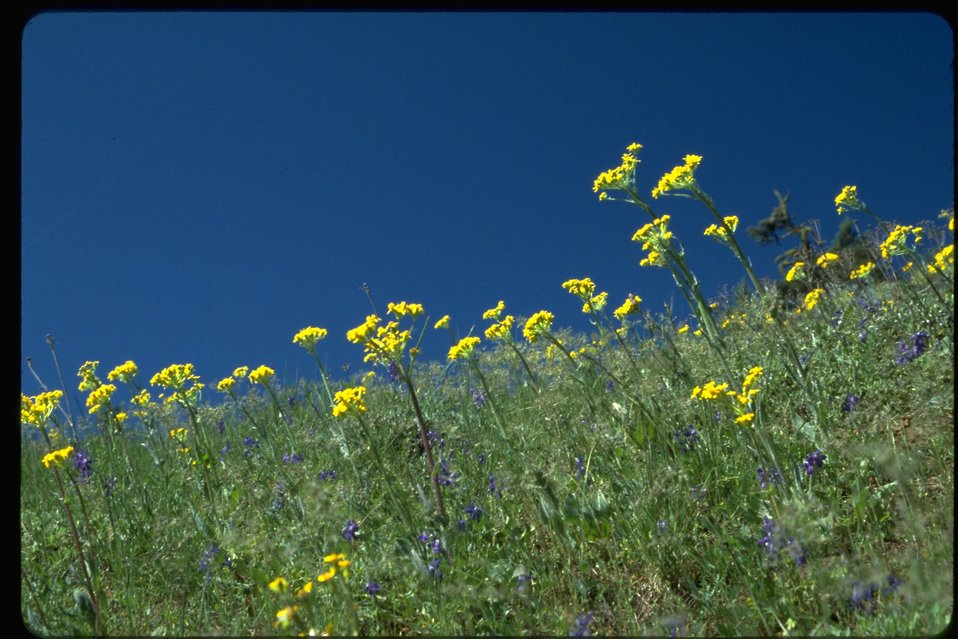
Medium shot of Western Groundsel and Penstemon wildflowers.